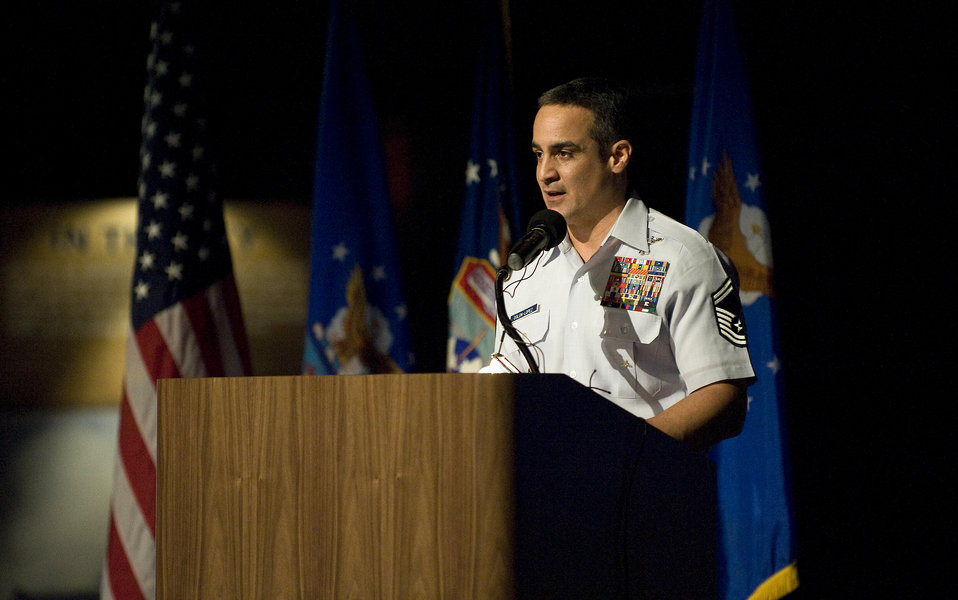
Museum opens exhibit dedicated to 'Warrior Airmen'

Senior Master Sgt. Ramon Colon-Lopez speaks about the importance of the Airman's Creed, the foundation of the Warrior Airman mindset at the opening of the Warrior Airmen Exhibit Jan. 12 at the National Museum of the U.S. Air Force at Wright-Patterson Air Force Base, Ohio. Sergeant Colon-Lopez is a pararescueman awarded the Air Force Combat Action Medal.